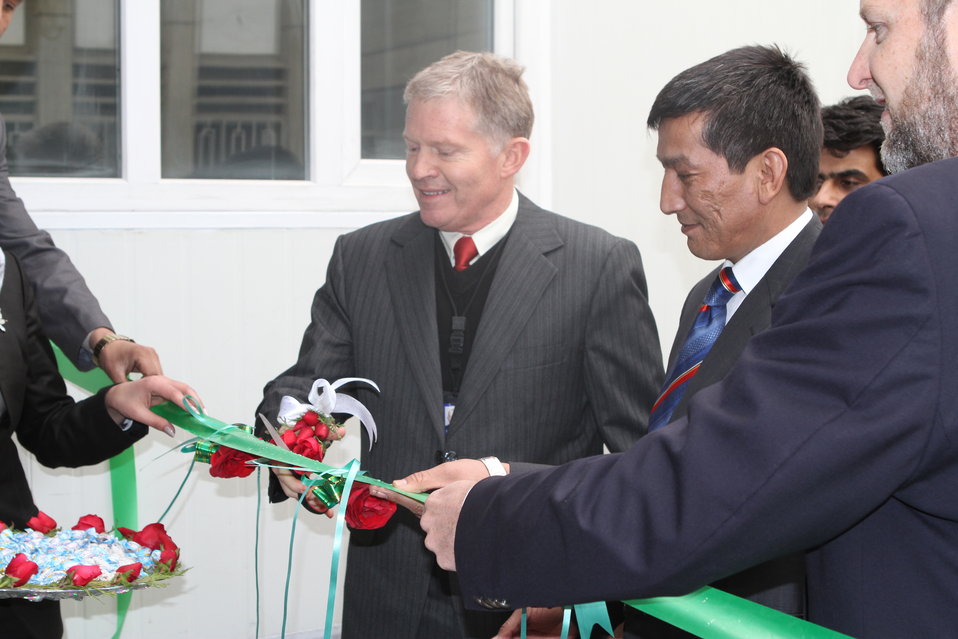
FAIR Training Center Ribbon Cutting

USAID Deputy Mission Director Jed Barton, Institute of Diplomacy Director Hazrat Wahriz, and US Embassy Deputy Political Counselor Geoff Odlum open the MFA Training Center with a ribbon cutting.